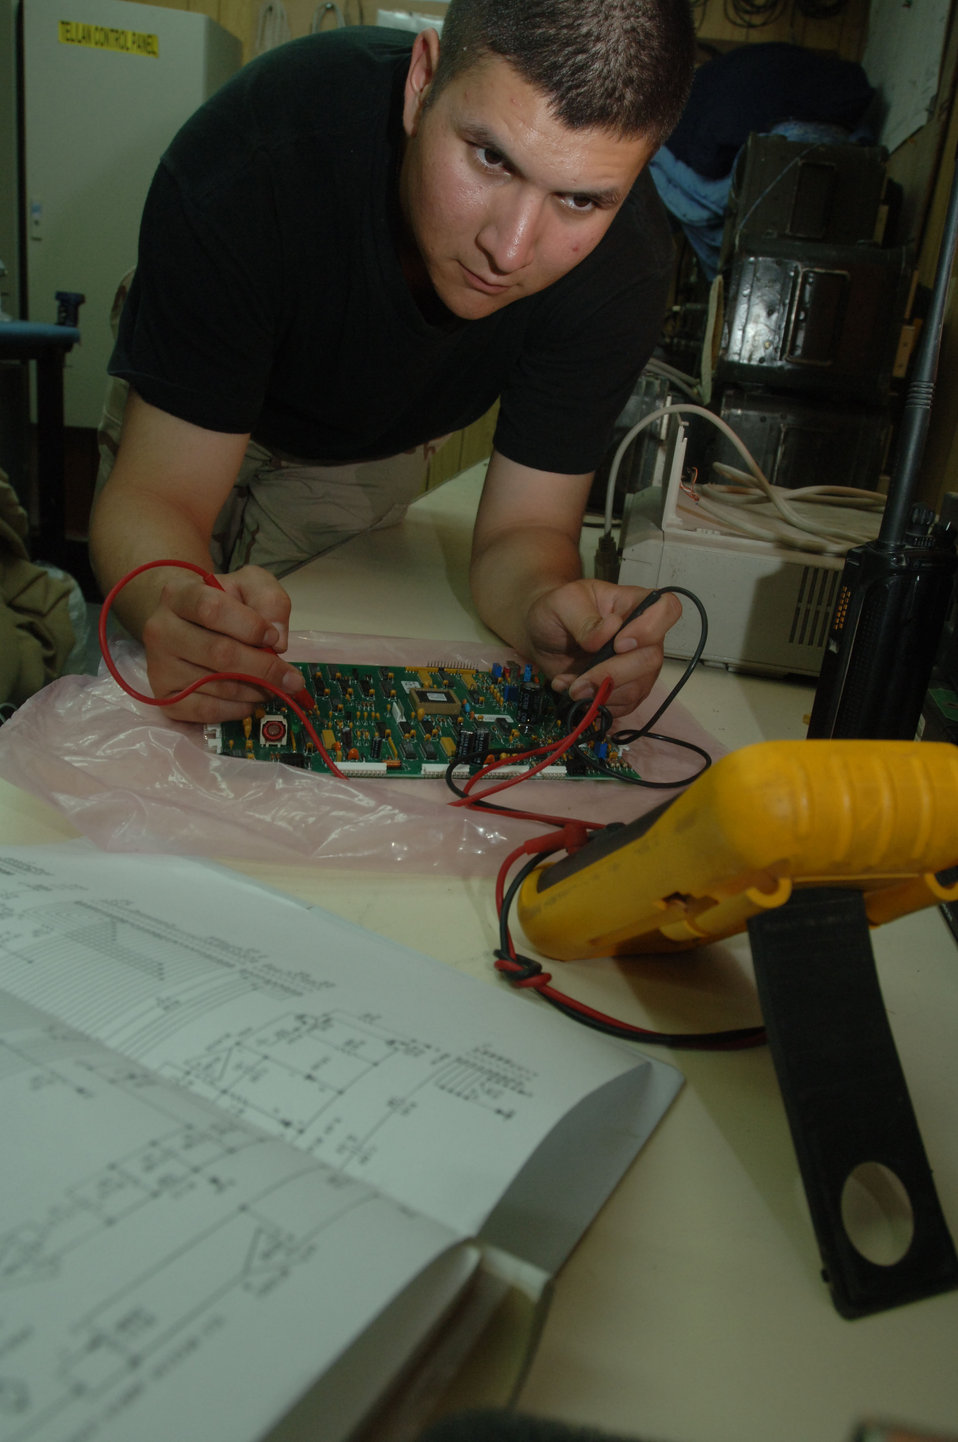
Operation Iraqi Freedom

ALI AIR BASE, Iraq -- Airman 1st Class Class Sergio Santos troubleshoots the base